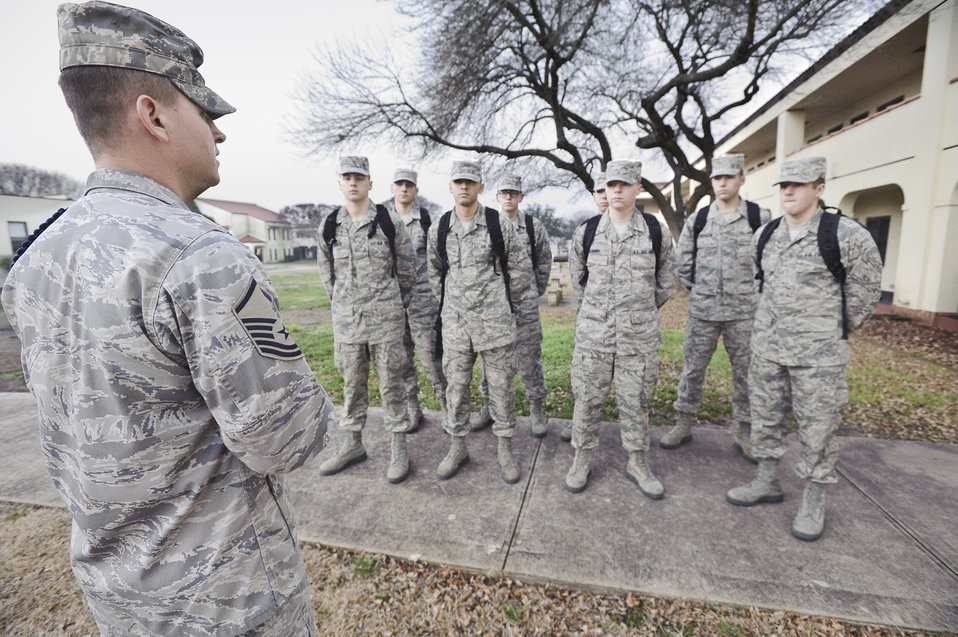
First group of BMT graduates begin sensor operator technical school

Master Sgt. Sammy Garvin reviews administrative issues during morning formation with the first eight nonprior service students assigned to the Basic Sensor Operators Course taught Jan. 20, 2010, at Randolph, Air Force Base, Texas. Sergeant Garvin is a 12th Operations Group, Det. 1 military training leader.